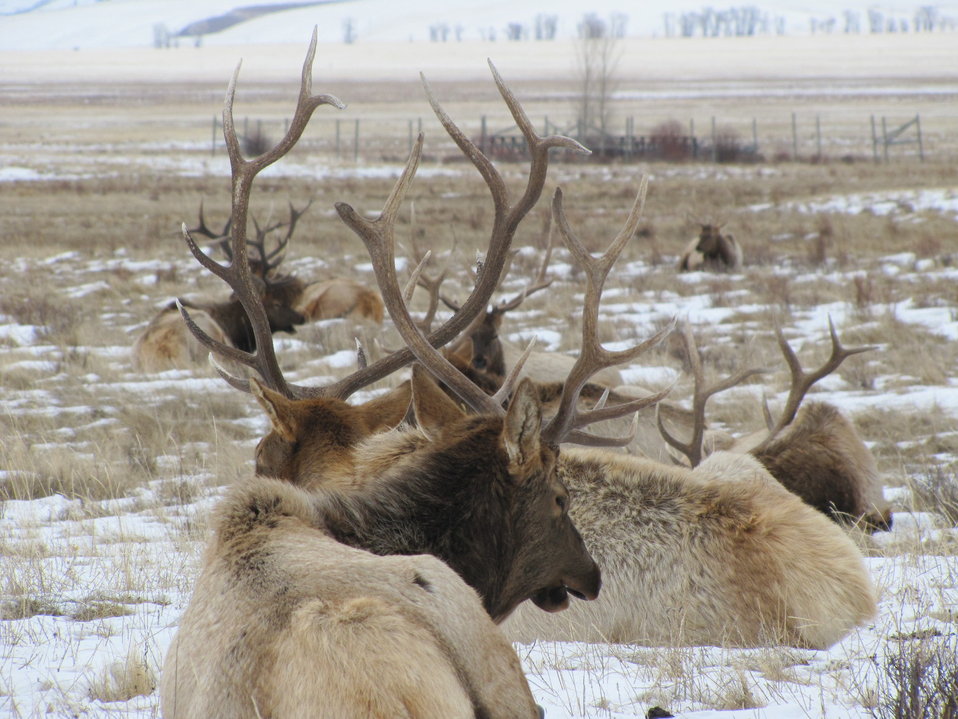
Tangle of Antlers

A group of bulls lying close to one another creates the illusion of a tangled mass of antlers for viewers on a sleigh ride.